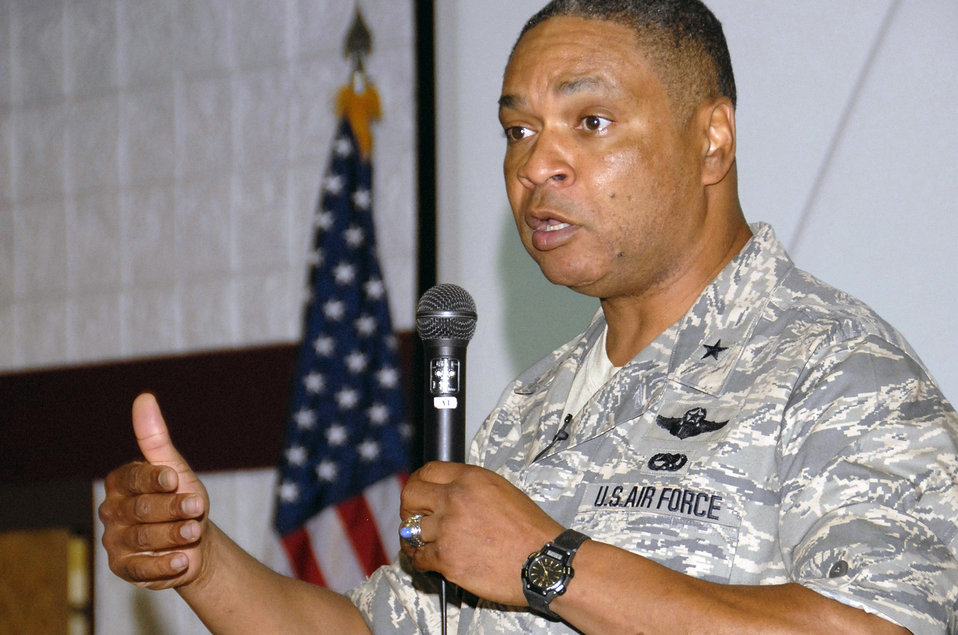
Air Guard leadership summit

Brig. Gen. Garry C. Dean, the Air Force's deputy inspector general, speaks with Air National Guard adjutants general, wing commanders, command chief master sergeants and other Guardsmen from around the nation Aug. 12 during the Air Guard's 2008 Leadership Summit at the Volk Field Combat Readiness Training Center in Wisconsin. The five-day summit carried a theme of